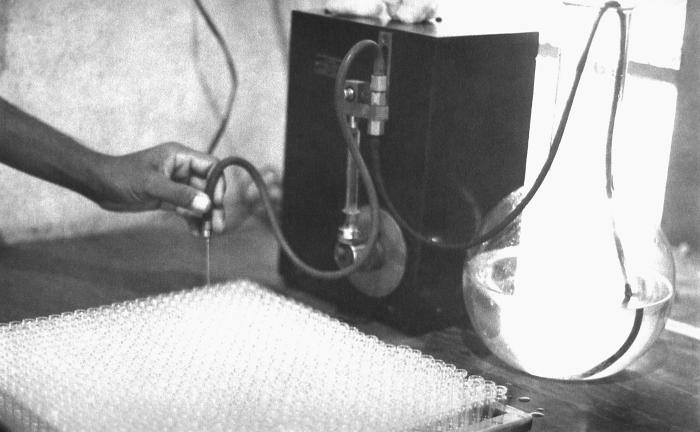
This image depicted a technician in a Bangladesh laboratory who was in the process of creating smallpox vaccine. It was captured by Dr. Stan Foster, EIS, Officer, Class of 1962, and a part of the worldwide Global Smallpox Eradication Campaign of the late 1960s, early 1970s.